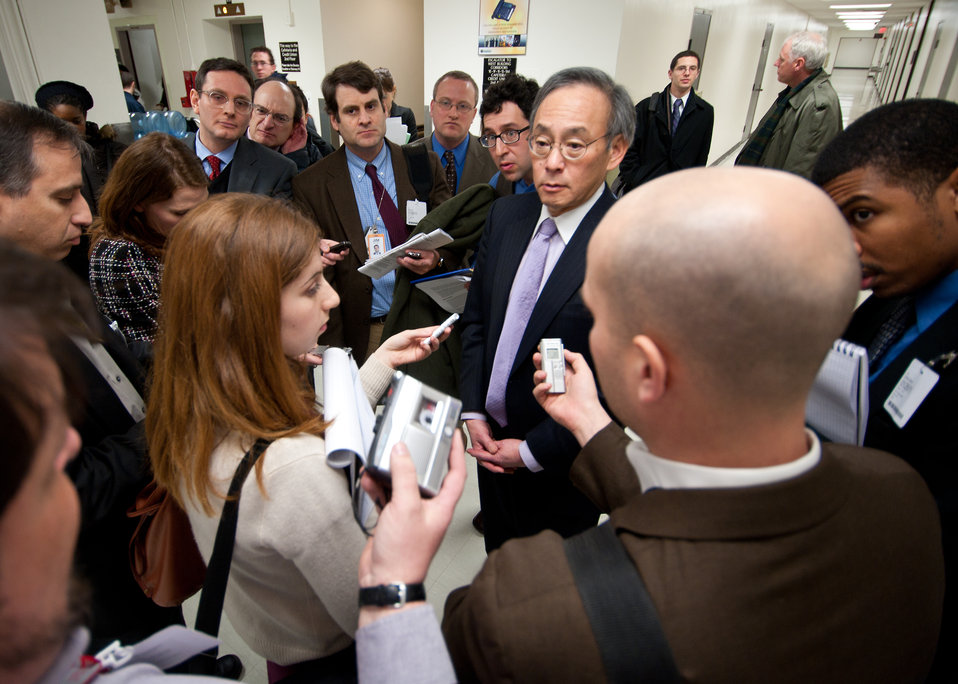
Energy Matters Online Townhall 5 of 5

Sec. Steven Chu speaks with reporters immediately following the Energy Matters Online Townhall.